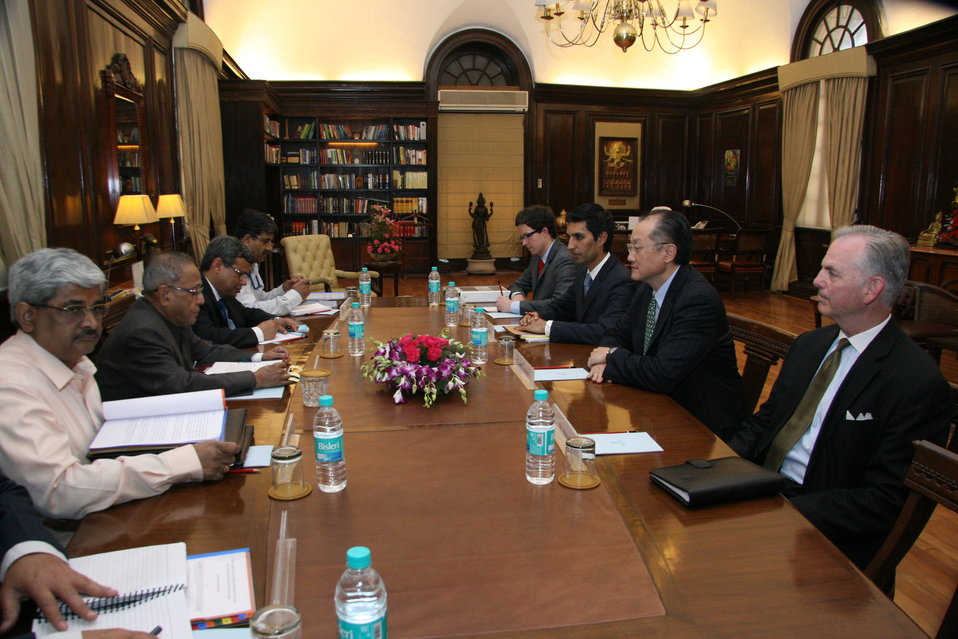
Dr. Jim Yong Kim Meeting with Indian Finance Minister Pranab Mukherjee

Dr. Jim Yong Kim met in New Delhi on April 3 with Indian Finance Minister Pranab Mukherjee. They discussed the important role of the World Bank in promoting global growth and helping developing countries protect against external shocks.